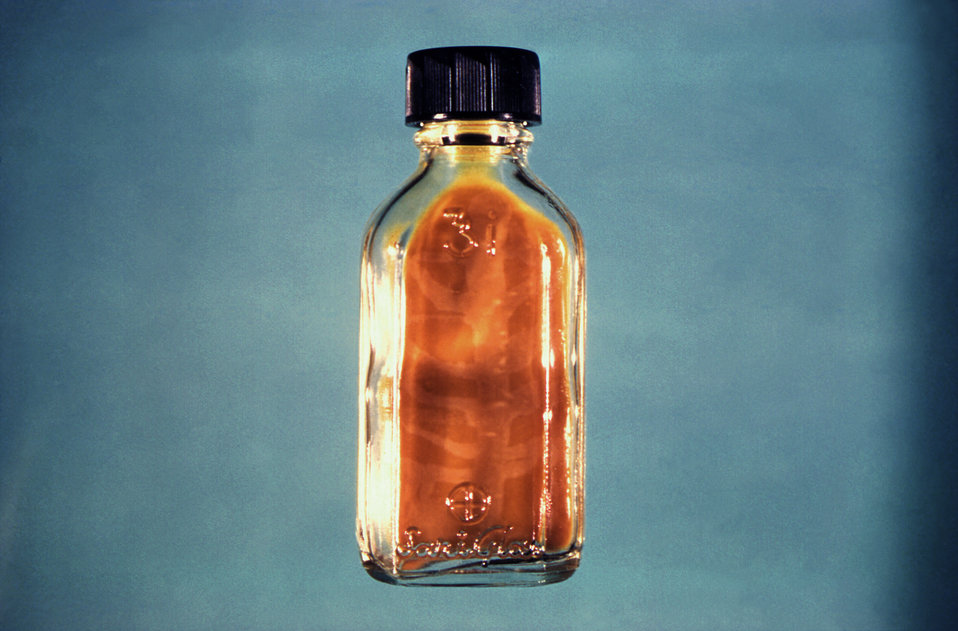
This culture flask contained what is referred to as 'Transgrow' medium, which is short for an experimental medium for transport and growth of Neisseria gonorrhoeae and N. meningitidis. In this case the medium had been inoculated with N. gonorrhoeae bacteria.